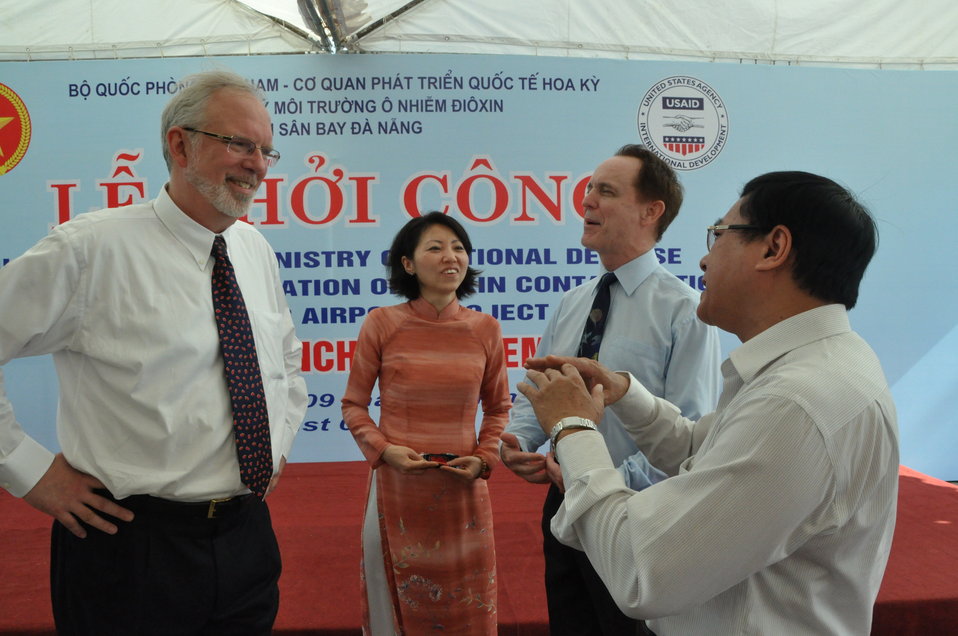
Environmental Remediation of Dioxin Contamination at Danang Airport Project Launch

Danang, August 9, 2012